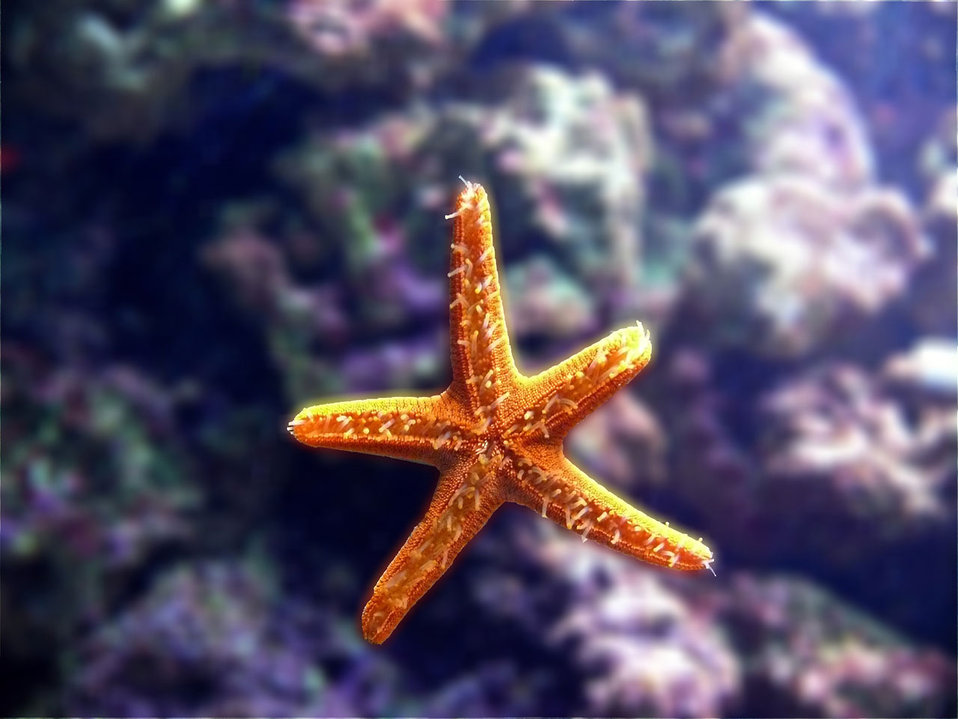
Star

Sea star in aquarium.